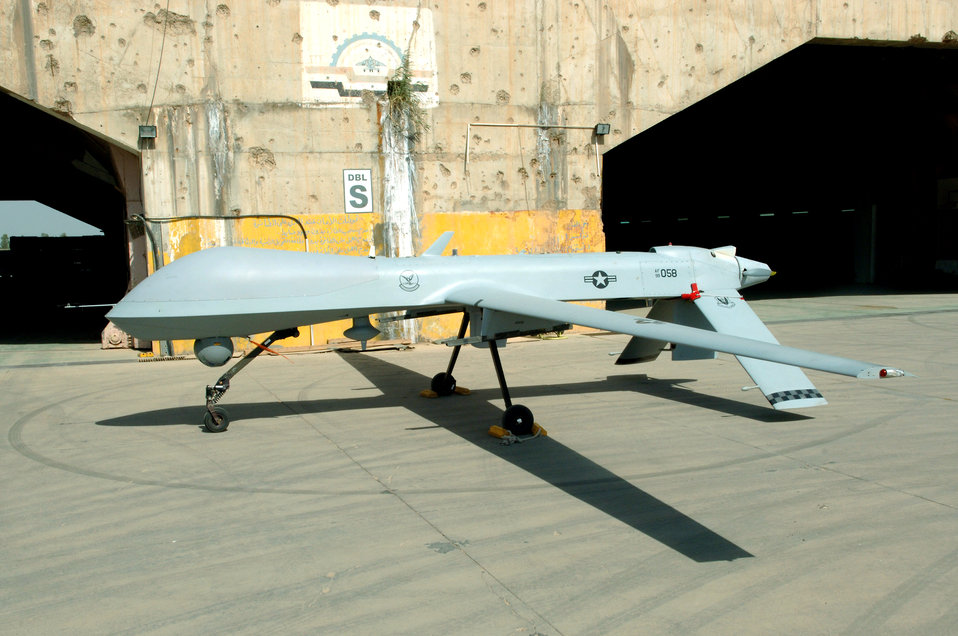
Predator operations

An MQ-1 Predator unmanned aerial vehicle sits on the parking ramp at Balad Air Base, Iraq. The Predator is a medium-altitude, long endurance, remotely piloted aircraft. Its primary mission is interdiction and conducting armed reconnaissance against critical, perishable targets.